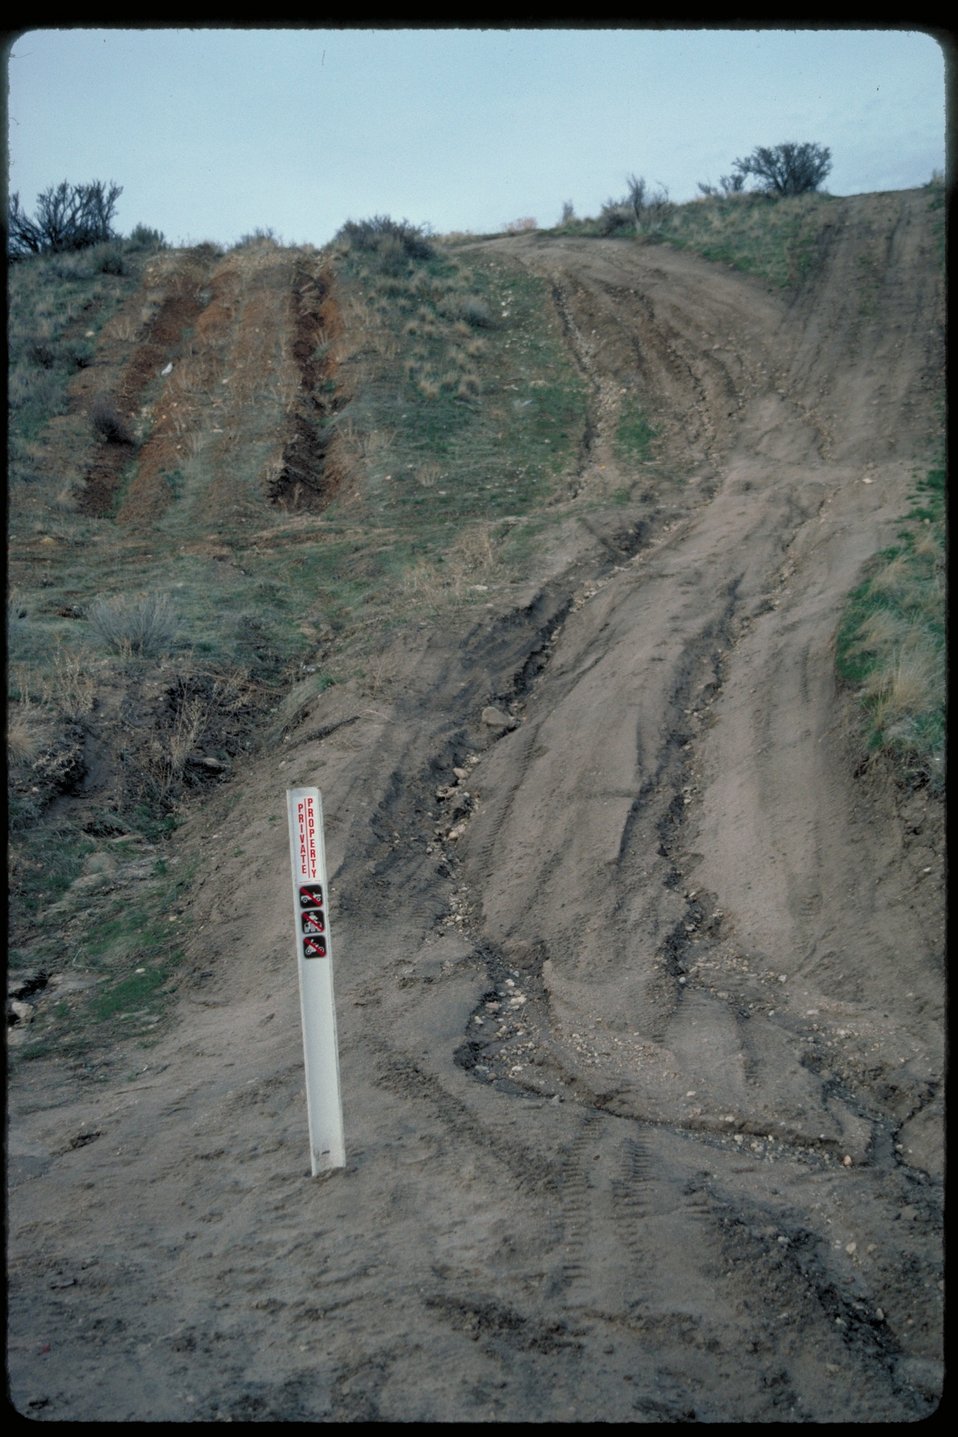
OHV Ruts Boise Front Four Rivers Field Office LSRD Lower Snake River District